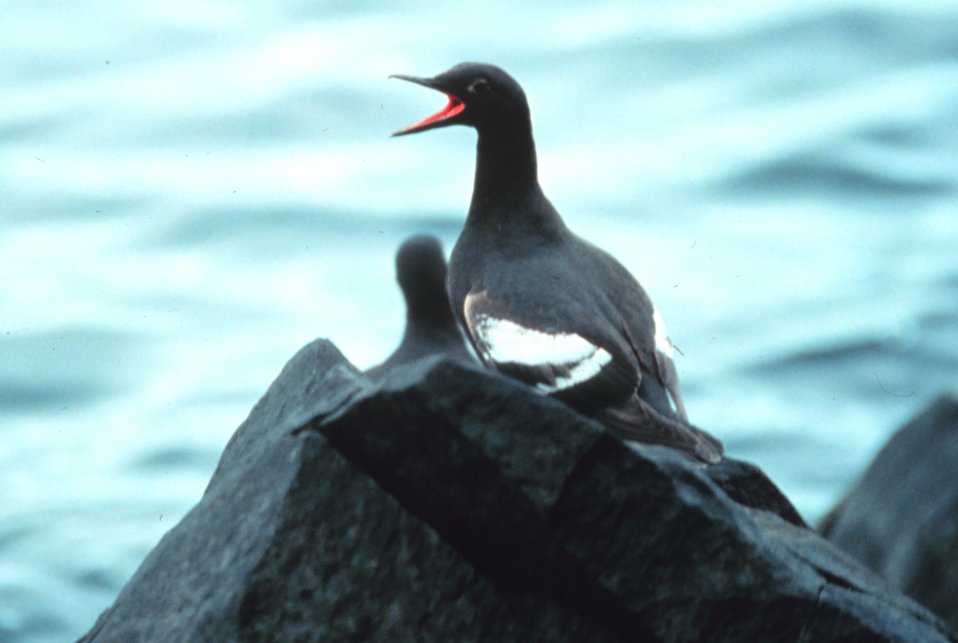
Marine bird squawking